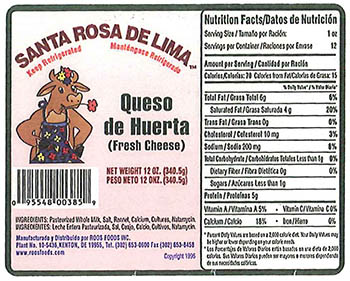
RECALLED – Variety of cheeses

February 25, 2014 – Product Recall – EXPANDED - Roos Foods Voluntarily Recalls Variety of Cheeses (listed below) Due to Possible Health Risk.